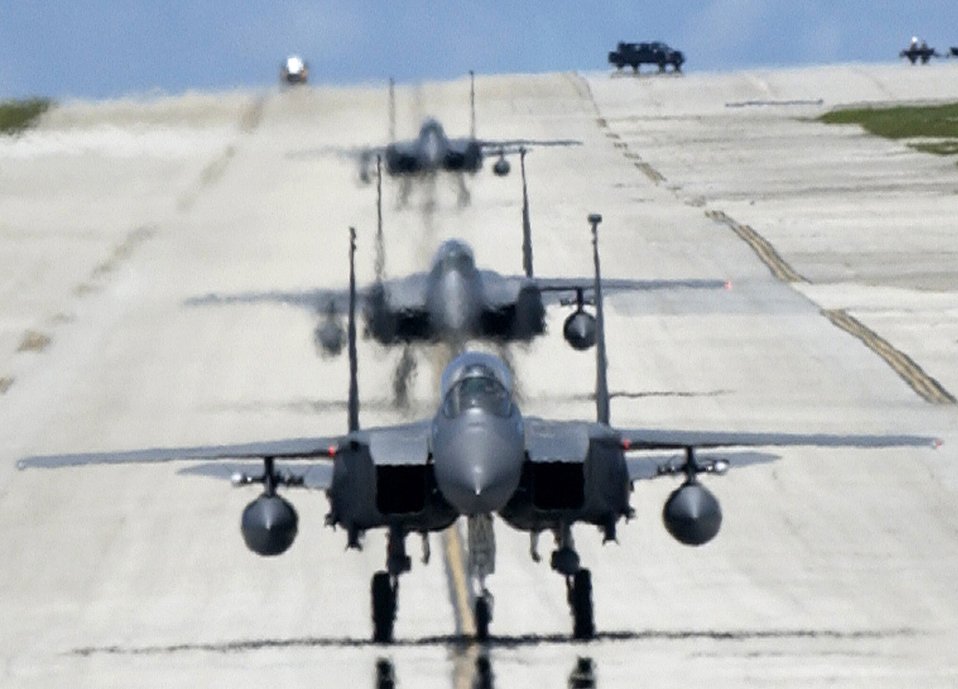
CENTAF Airpower Summary for April 4, 2007

F-15E Strike Eagles, like these, provide infrastructure protection and support to coalition troops, reconstruction activities and operations to deter and disrupt terrorist activities.